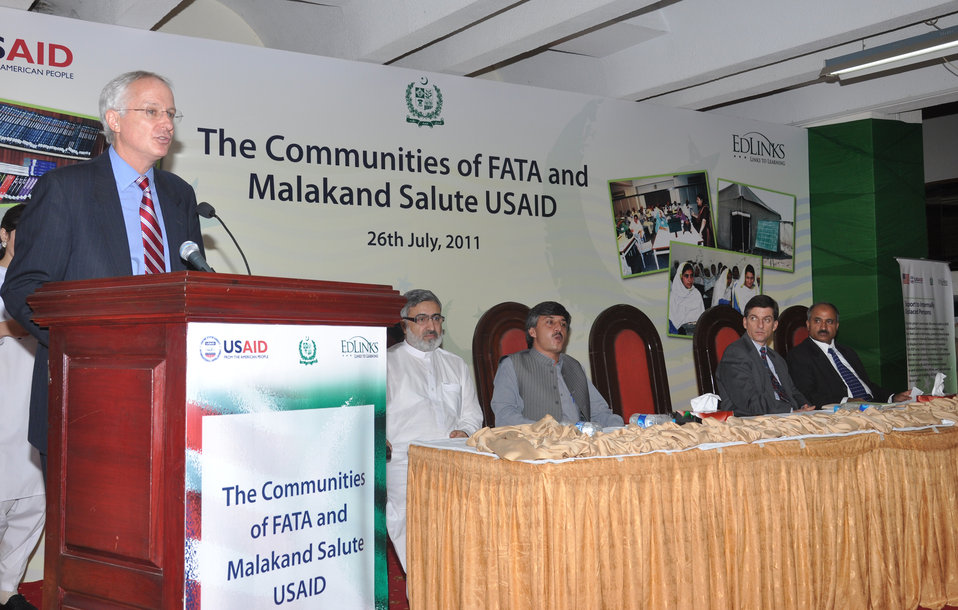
USAID Education Project in FATA and Malakand

Islamabad, July 26, 2011 – U.S. Ambassador Cameron Munter giving remarks at the closeout event for the USAID education project in FATA and Malakand. KPK Secretary of Education, Mr. Mushtaq Jadoon, USAID Mission Director Andrew Sisson, and KP Education Minister Sardar Hussain Babak were also present at the ceremony.

The event celebrated completion of USAID’s ED-LINKS project in FATA and Malakand. The project has improved schooling for 450,000 students in over 700 schools in FATA and Malakand over the past three years. In support of priorities established by the governments of KP and FATA, the project helped train more than 3,000 teachers, support teacher training institutes, and teach children in camps for internally displaced persons.